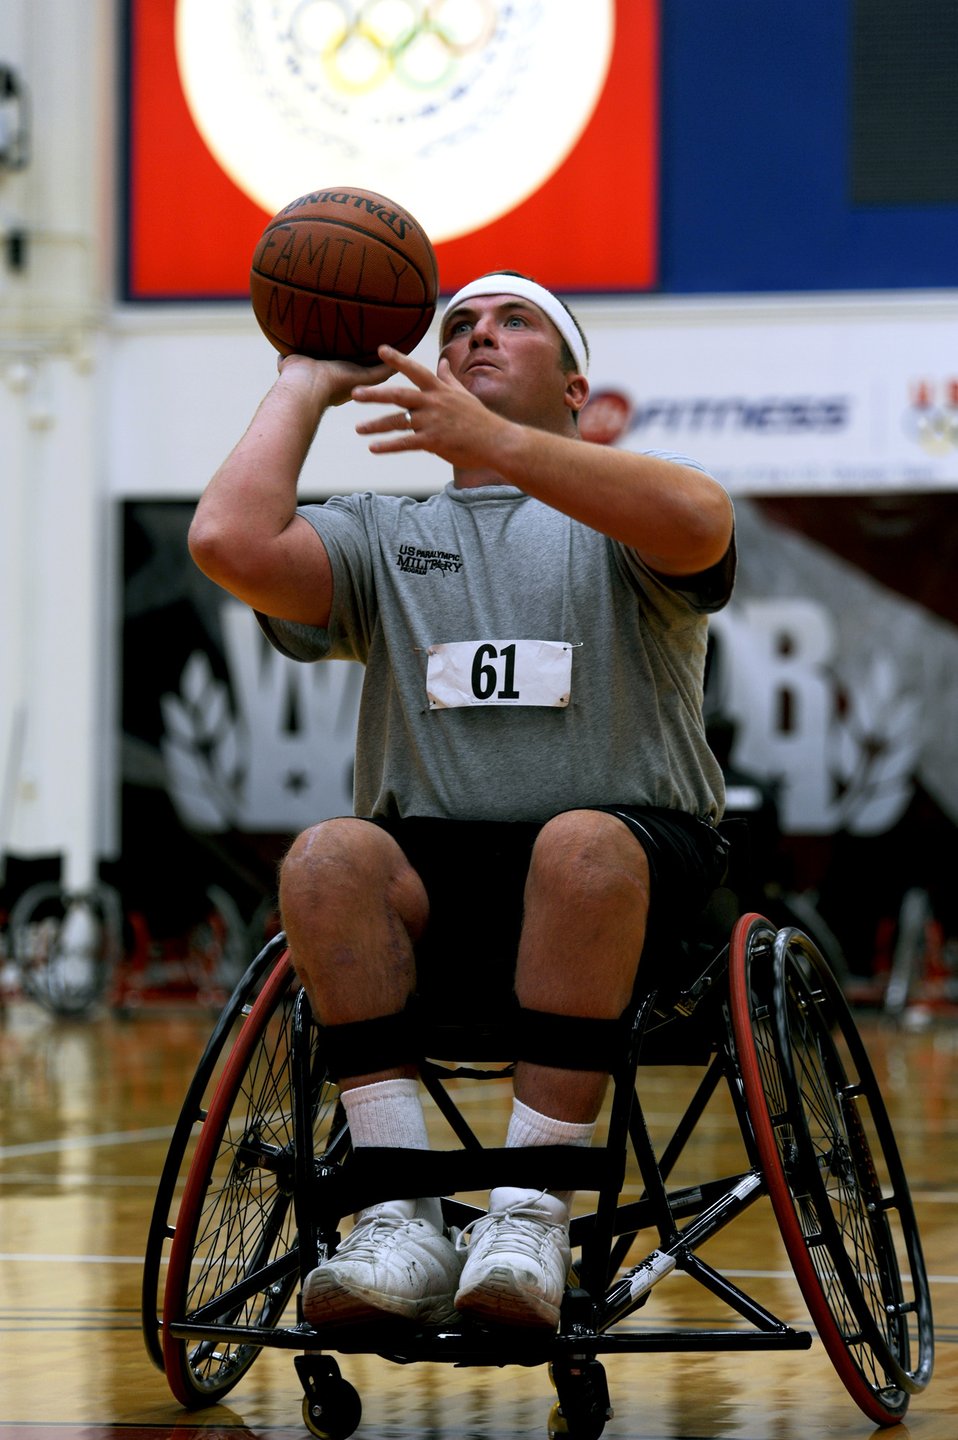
Warrior Games

Staff Sgt. Richard Pollock II, a member of the Air Force wheelchair basketball team, takes a shot May 10, 2010, during a practice session at the Olympic Training Center in Colorado Springs, Colo. Teams from the Air Force, Army, Navy, Marines and Coast Guard are participating in the inaugural Warrior Games which begin May 10 and finish May 14.